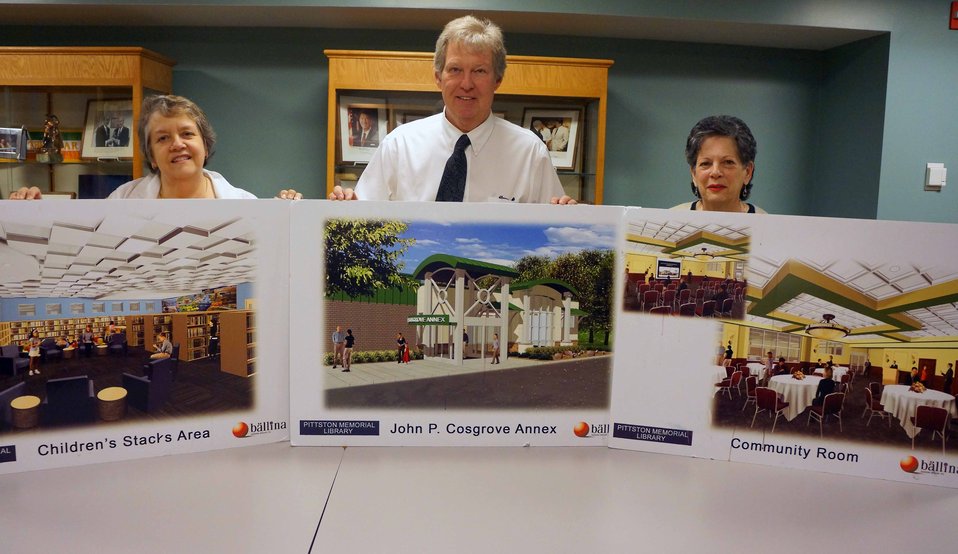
Pittston Library[2]

(L to R) Pittston Library Director Anne Hogya, U.S. Department of Agriculture (USDA) Rural Development (RD) Pennsylvania State Director Thomas Williams, and Library Board President Barbara Quinn display artist renderings of the library expansion slated to begin this summer in Pittston, PA.